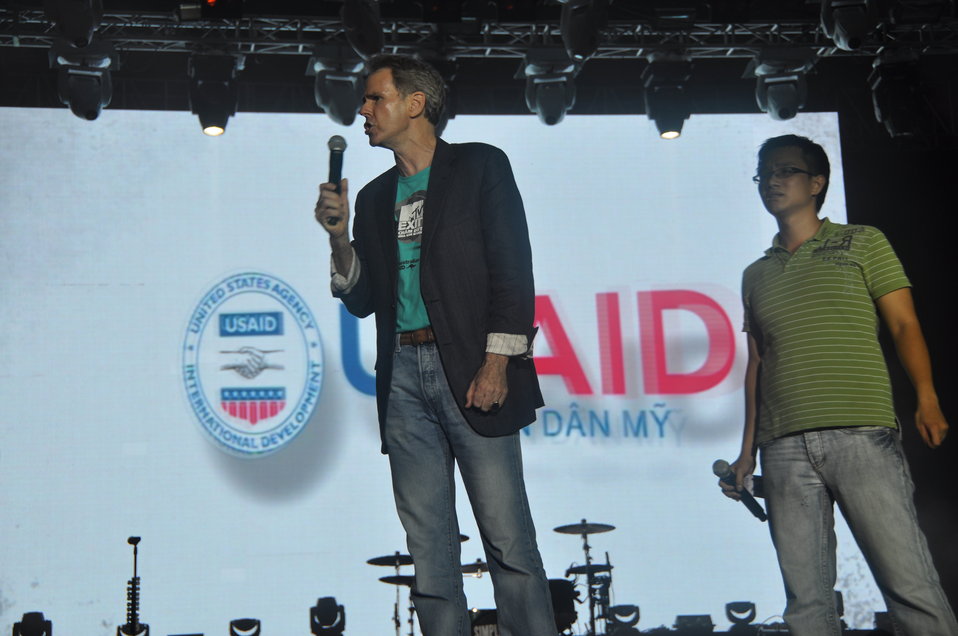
U.S. Ambassador to ASEAN, David L. Carden, challenges youth to 'stay angry and stay young' by fighting human trafficking

USAID co-sponsors MTV EXIT concert, campaign against human trafficking